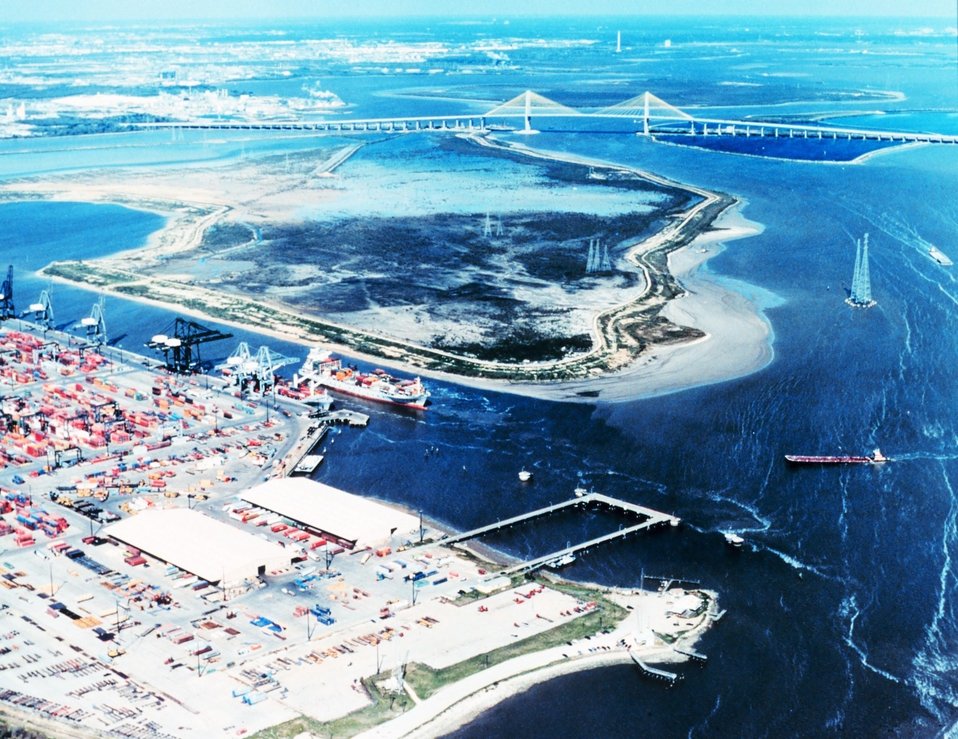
2945 North Latitude 9522 West Longitude.